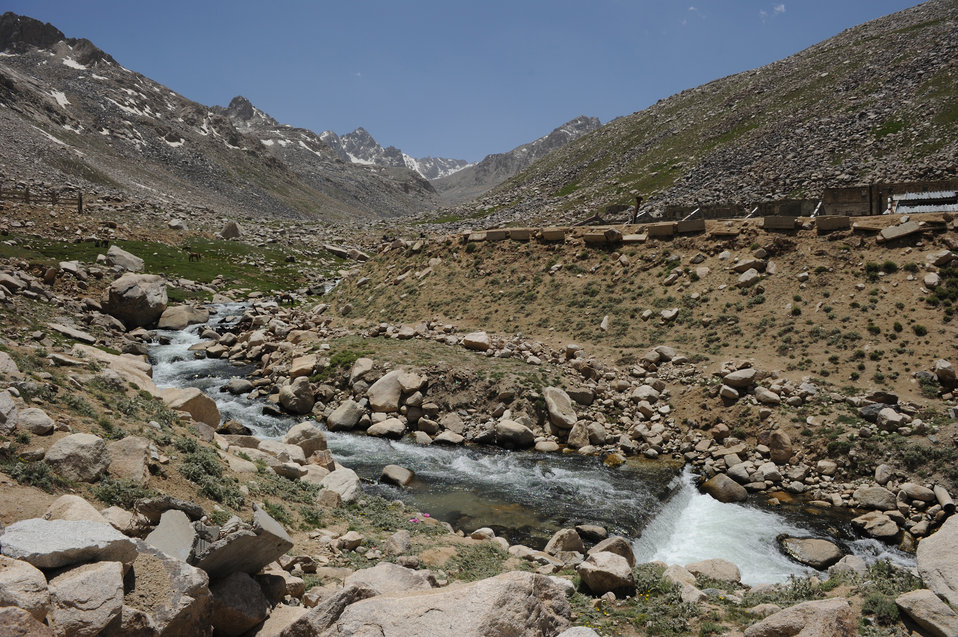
Near the North end of the Salang Tunnel on the border of Parwan and Baghlan Provinces, Afghanistan, on Wednesday, June 15, 2011. (S.K.Vemmer/Department of State)